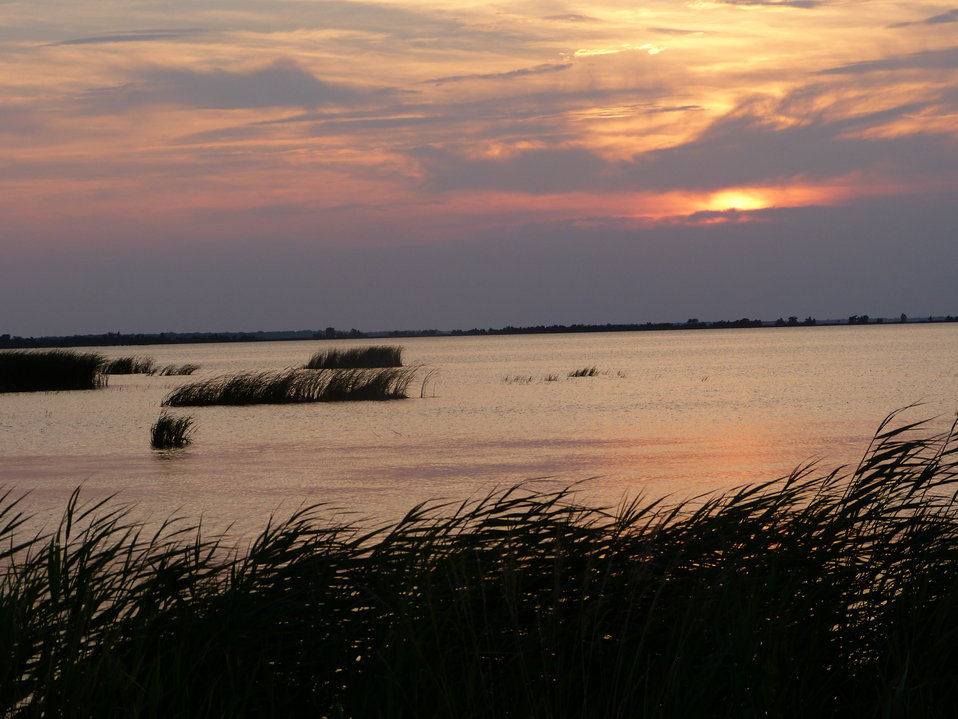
Sunset at Lake Mattamuskeet

Mattamuskeet National Wildlife Refuge in North Carolina.